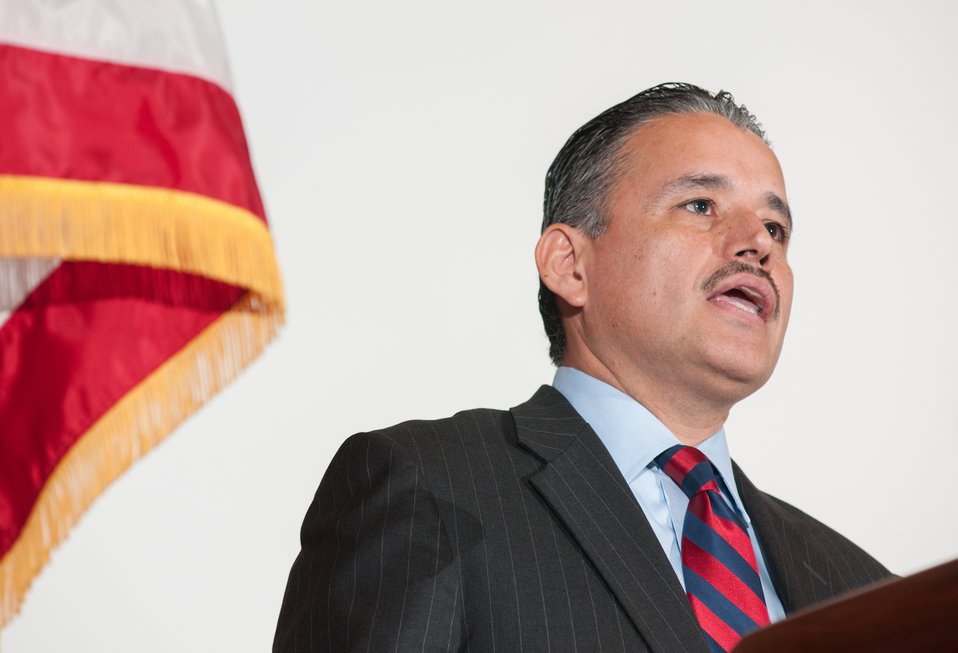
U.S. Department of Agriculture (USDA), Office of the Secretary (OSEC), Deputy Chief of Staff Oscar Gonzales speaks, during the USDA Asian Pacific American Heritage Month Observance, at the USDA headquarters in Washington, D.C., on Thursday, May 23, 2013. This year’s theme is “Building leadership; Embracing the Cultural Values and Inclusions.”